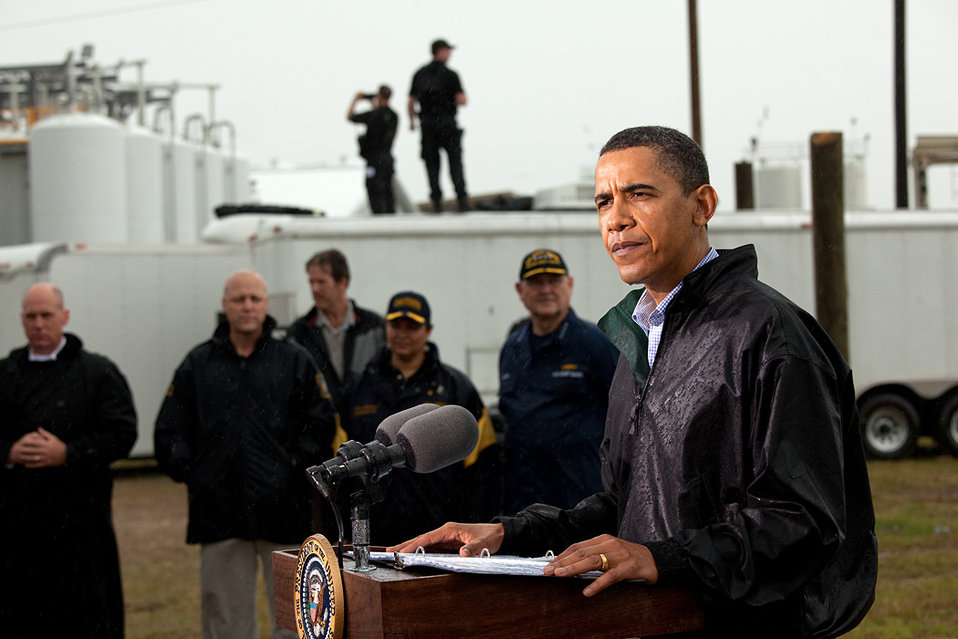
Administration Responds to BP Oil Spill

May 2, 2010 - President Barack Obama delivers remarks in the rain at the Coast Guard Venice Center in Venice, La.